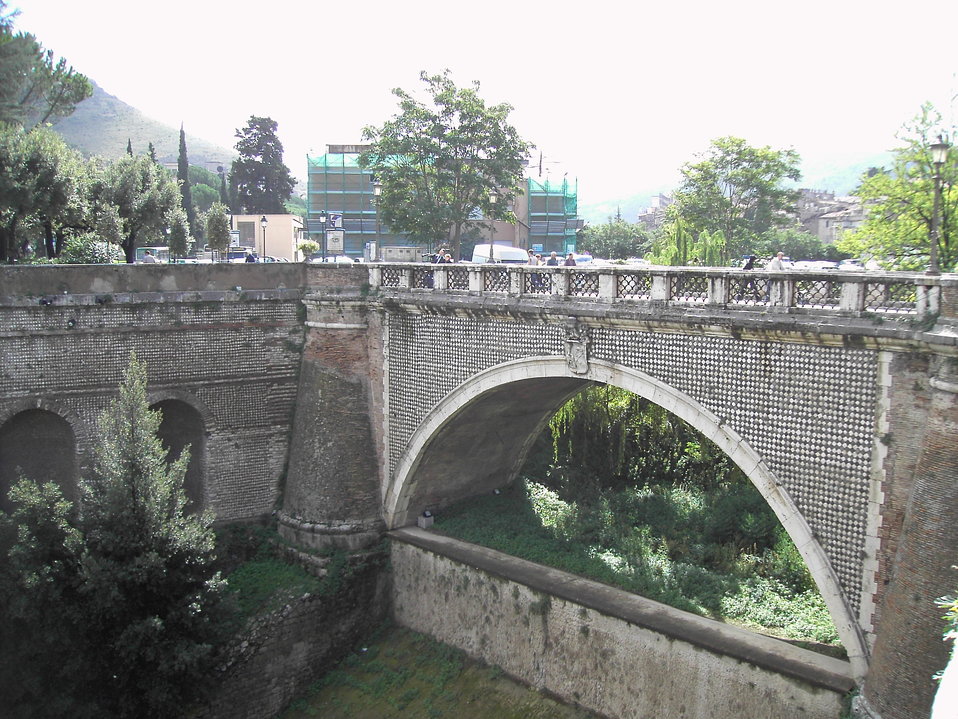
004 TivoliPonteGregoriano